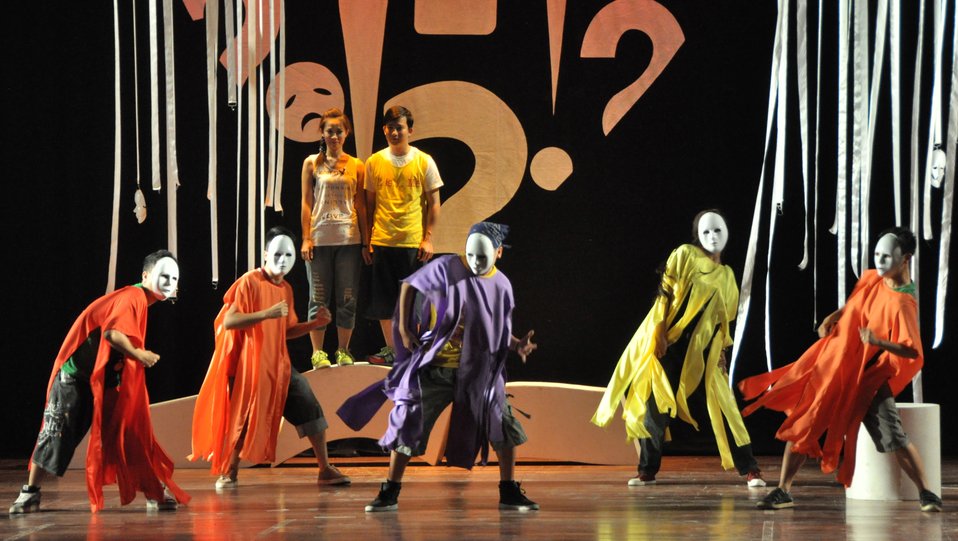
PEPFAR Musical Questions and Exclamations

Hanoi, May 17, 2013